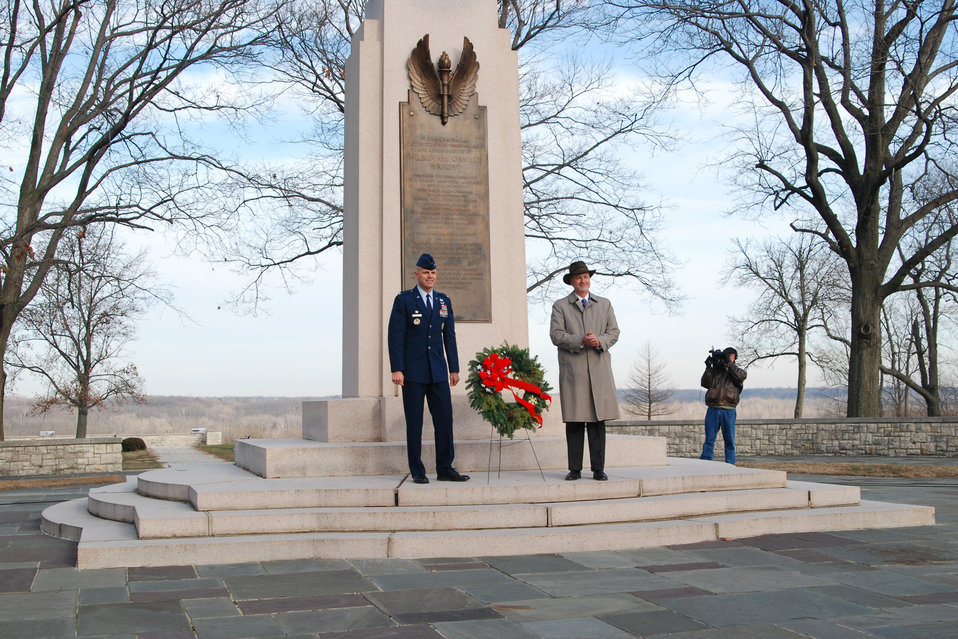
Wright Brothers

Col. Brad Spacy and Stephen Wright place a wreath at the Wright Brothers Memorial overlooking Wright-Patterson Air Force Base, Ohio, on Dec. 17, 2009, during a ceremony marking the 106th anniversary of the Wright brothers' first powered flight. Mr. Wright is the Wright brothers' great grand-nephew and Colonel Spacy is 88th Air Base Wing commander.